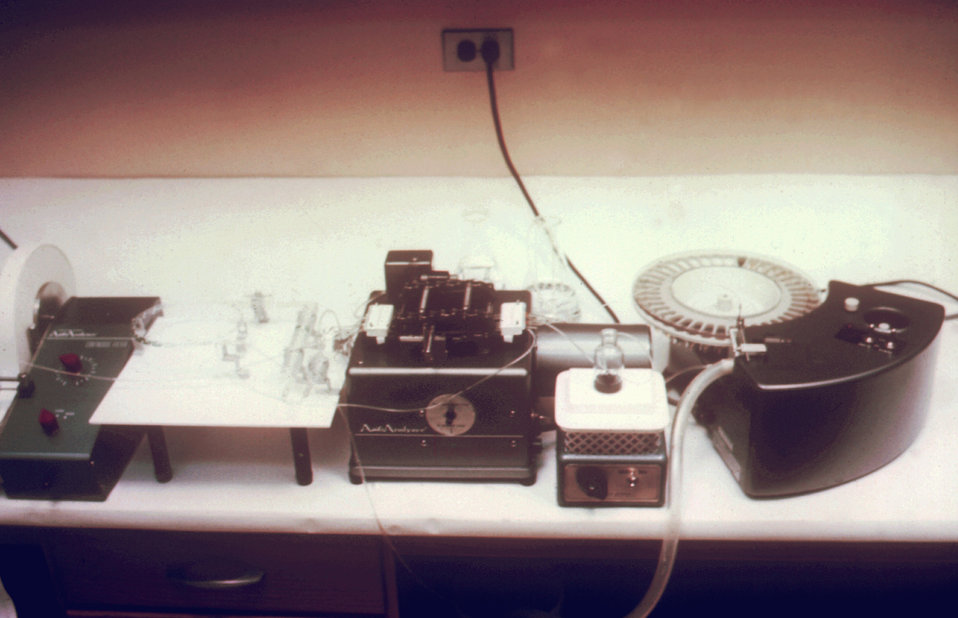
This 1974 photograph depicts the Automated Reagin Test (ART) equipment, used in syphilis screening.